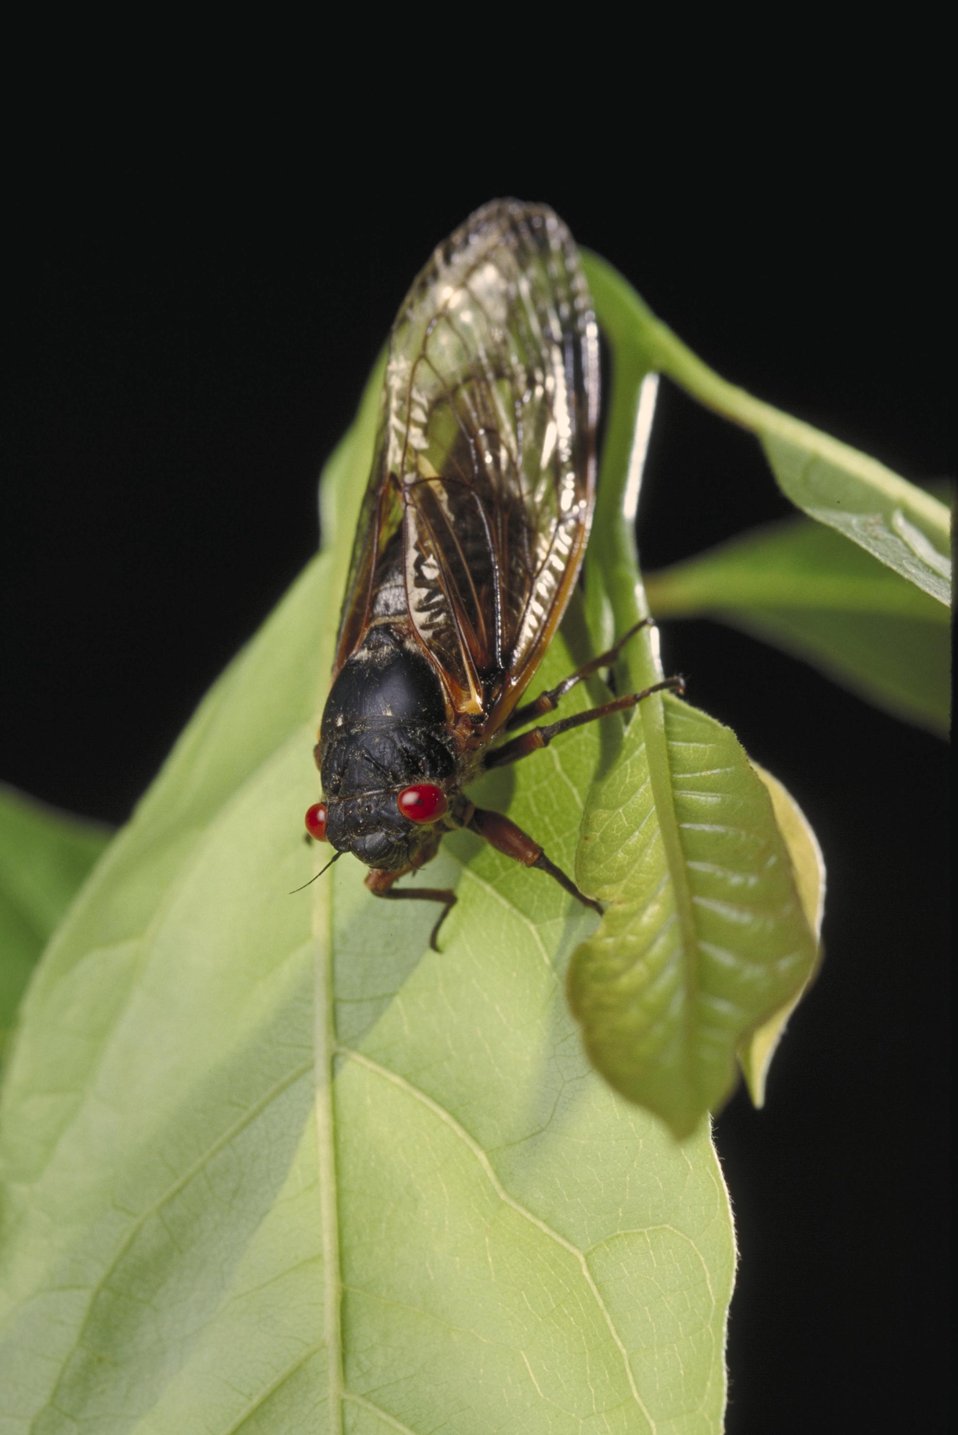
In the early spring of 2013 the eastern half of the United States will see and hear the emergence of the 17-year Cicada (Magicicada). The 17-year Cicada is a large insect, with a black body, red eyes, and delicate wings about an inch and a half long. They will emerge from the ground as nymphs, climb onto trees and shed their skins. The males will then sing loudly to attract female mates. Once mated the females lay between 400 to 600 eggs in tree branches before they die. The nymphs hatch and burrow into the ground and live underground for the next 16 years sucking sap out of tree roots. The cicada’s above ground cycle lasts about a month before they die. Cicada’s have no sting or bite and are harmless to humans and pets. But they are annoying with their constant singing. USDA photo by Ken Hammond. 96CS0380